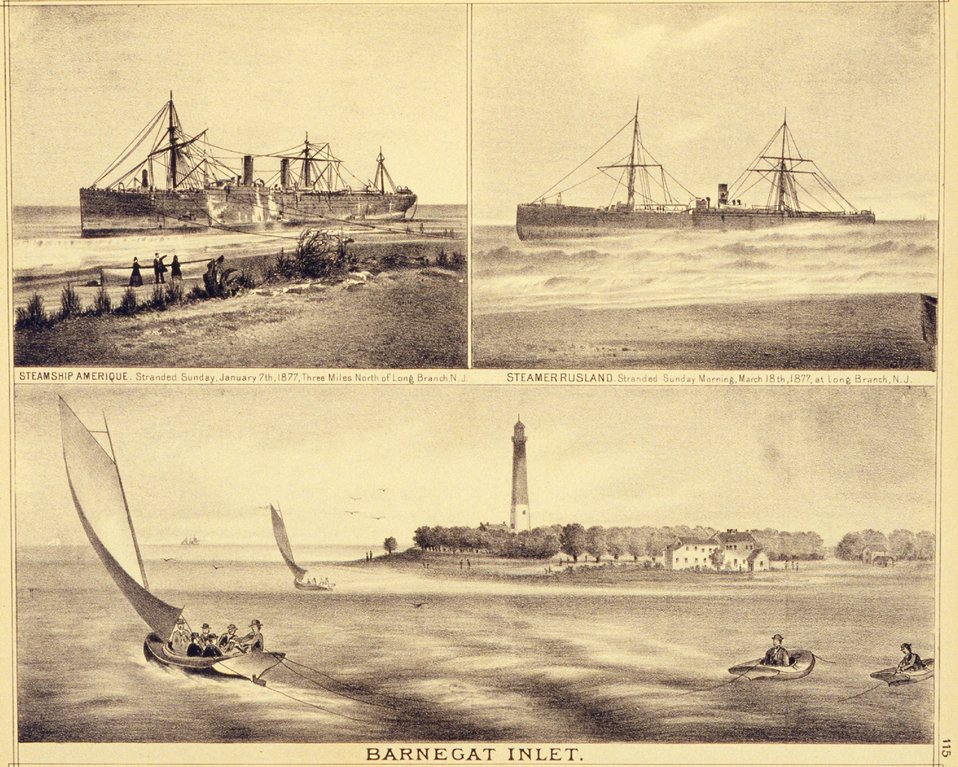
Top: Two steamers stranded at Long Branch, New Jersey. Bottom: Barnegat Inlet and lighthouse. P. 115. 'Historical and Biographical Atlas of the New Jersey Coast,' by T. F. Rose, 1878.